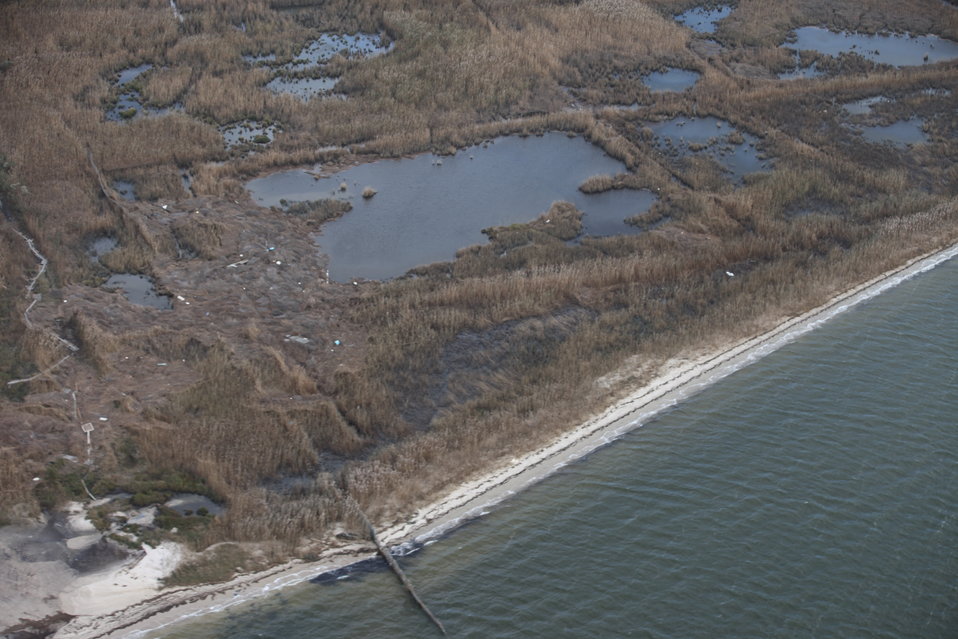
Marsh at Wertheim National Wildlife Refuge (NY)

Marsh debris at Wertheim National Wildlife Refuge in the aftermath of storm Sandy.